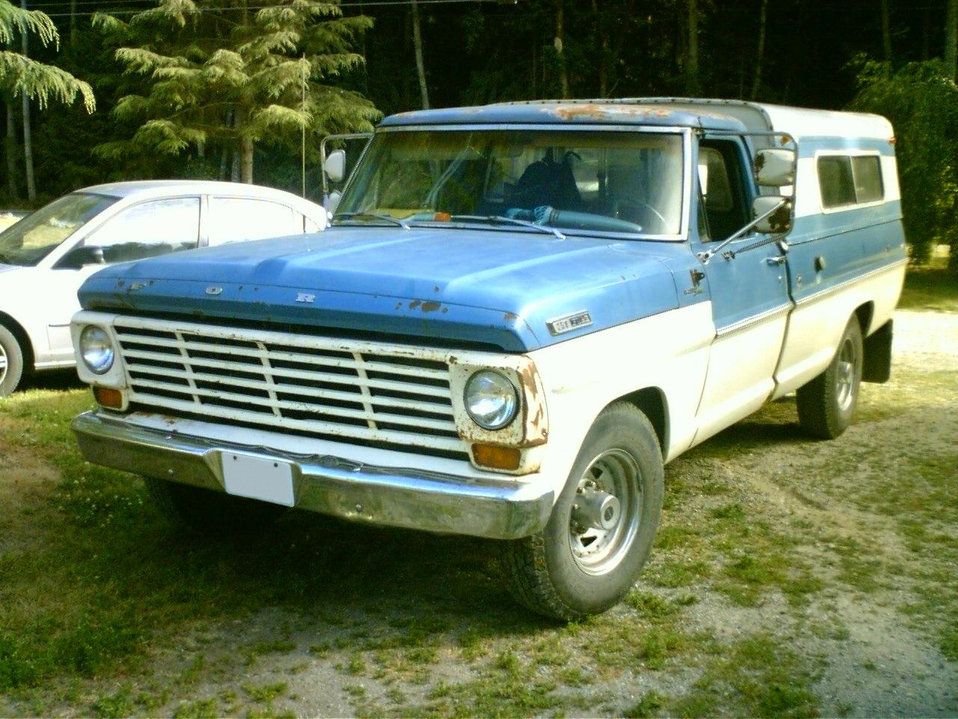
1968 Ford F-series pickup truck. Warm Springs Christian Camp, Stanwood WA. Arthur Hu ipaq rx3715 PDA camera